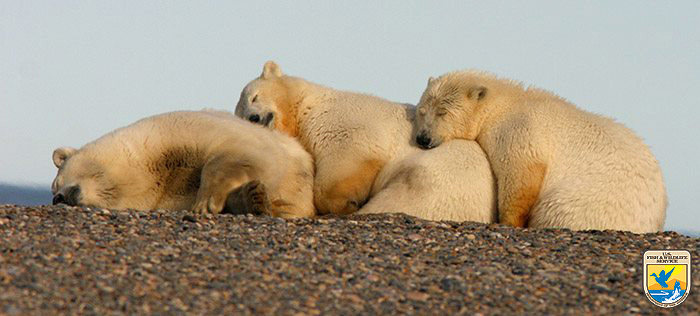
Polar bears snuggling, Arctic National Wildlife Refuge